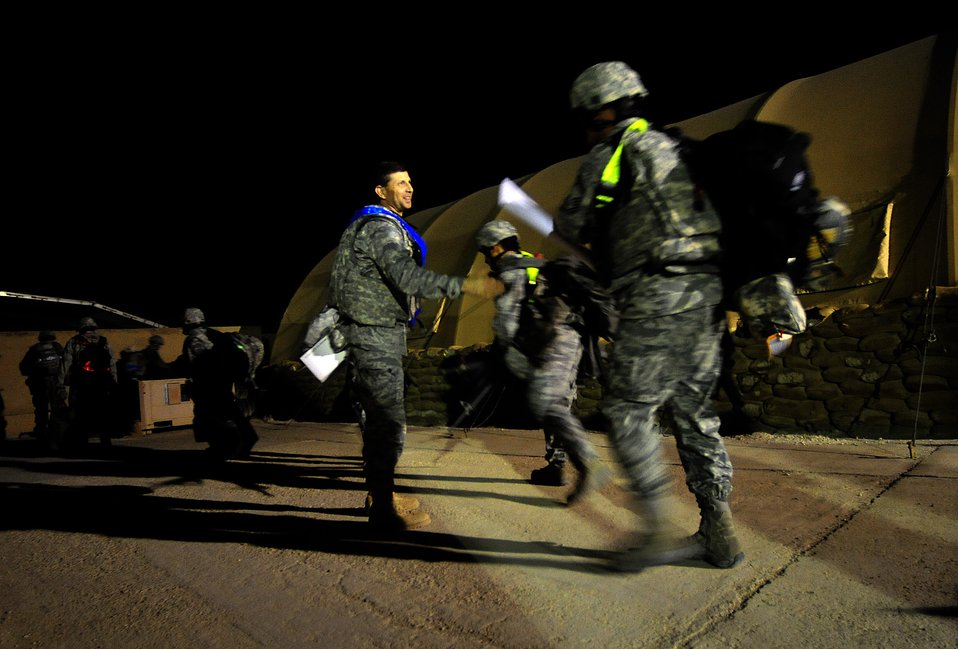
Last Airmen flying out of Iraq

Col. Ted Mathews shakes the hand the Airmen under his command Dec. 18, 2011, before they board a C-17 Globemaster III at Ali Air Base, Iraq. Mathew's Airmen were the last Airmen to redeploy from Iraq. Mathews is the 407th Air Expeditionary Group commander.